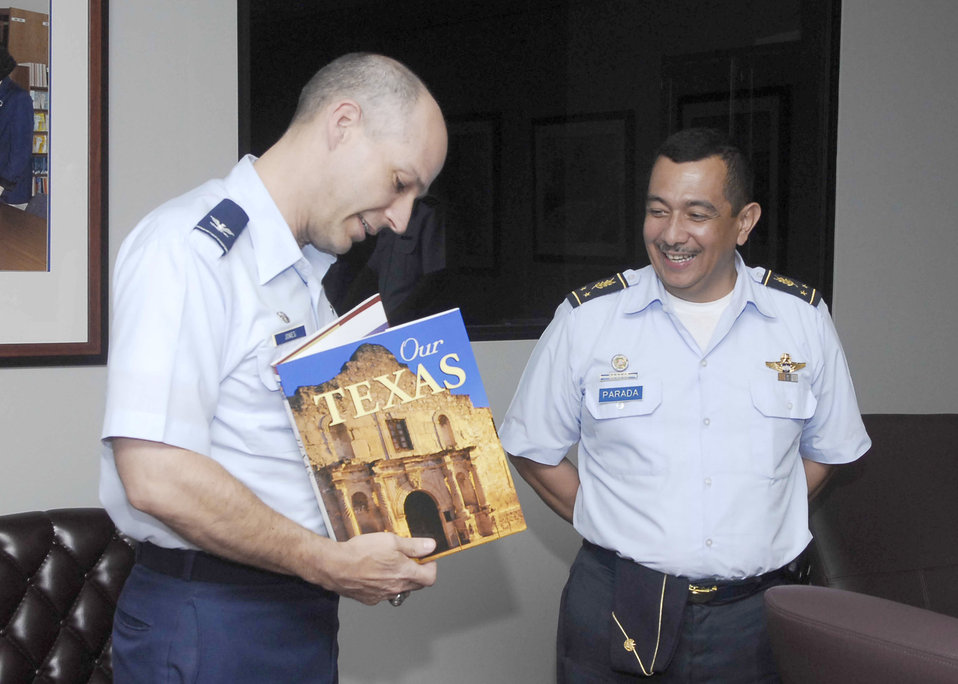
El Salvadoran vice chief views AETC programs

Col. Howard Jones III presents El Salvadoran air force Brig. Gen. Jaime Parada with a memento May 11, 2010, during his two-day visit to Lackland Air Force Base, Texas. Colonel Jones III is the commandant of the Defense Language Institute English Language Center. General Parada is the El Salvadoran vice chief of the Joint General Staff.